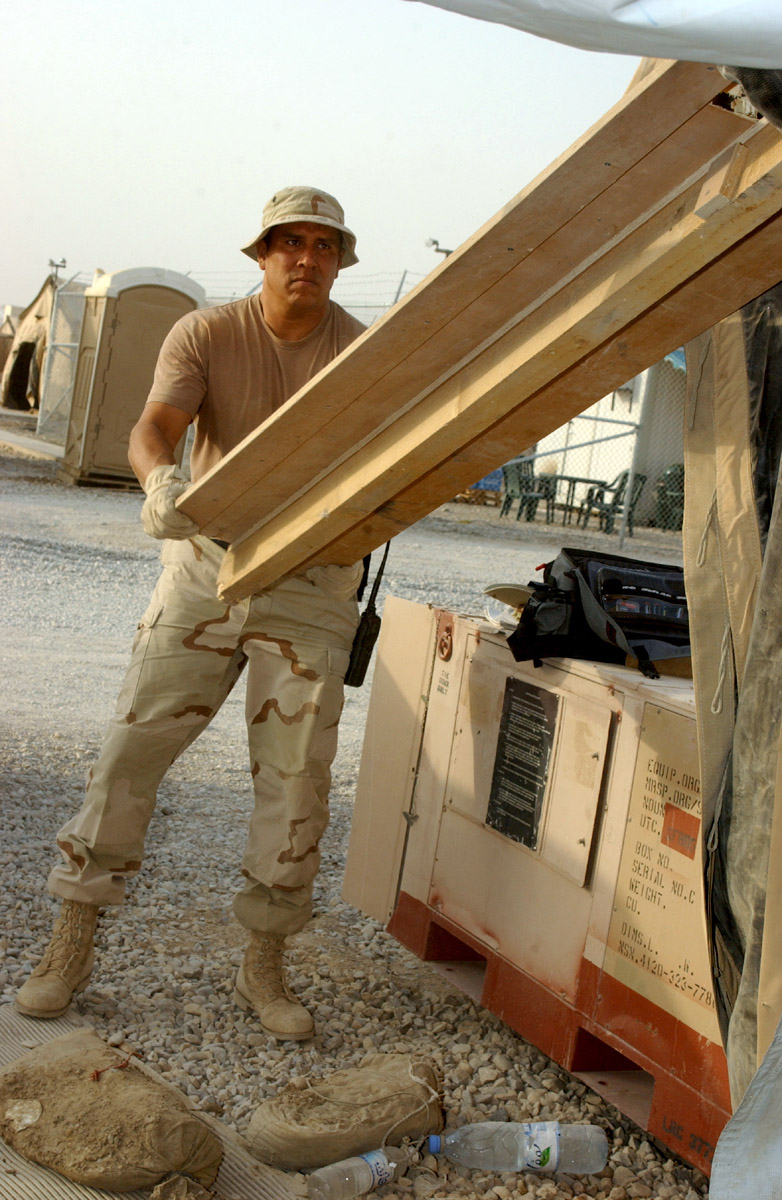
New additions

ALI BASE, Iraq (AFPN) -- Tech. Sgt. Ray Urbina takes apart the door frame of a temporary lodging tent to make way for a new services facility. Sergeant Urbina is assigned to the 407th Expeditionary Civil Engineer Squadron.